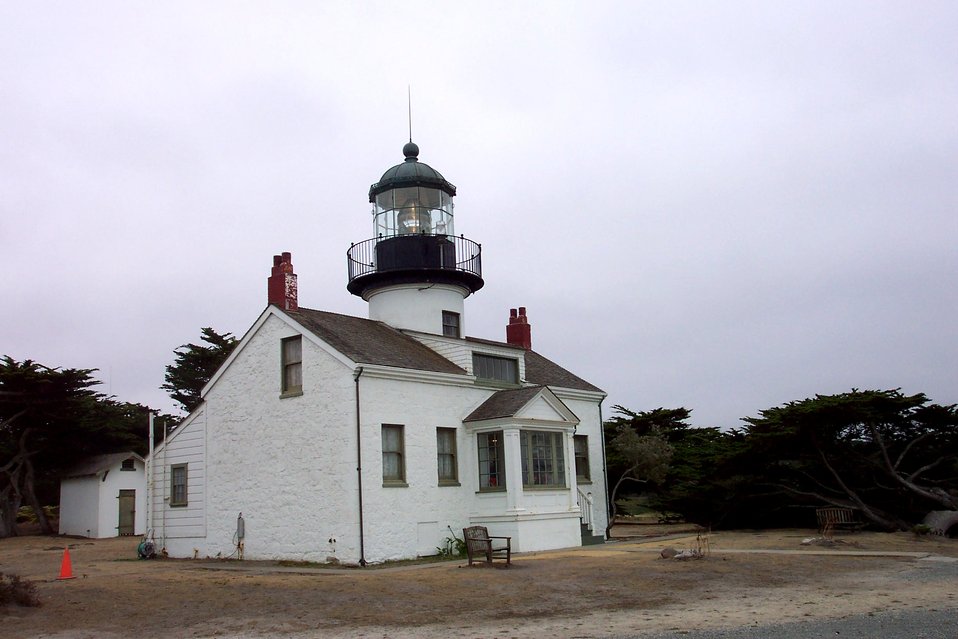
The Point Pinos Lighthouse.